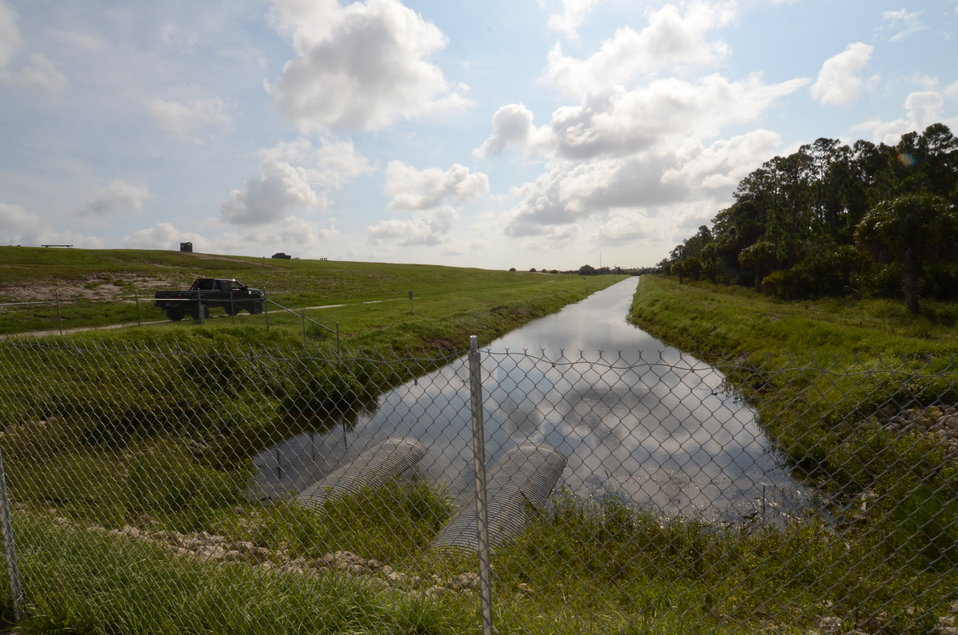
Agriculture Secretary Tom Vilsack today announced $100 million in financial assistance to acquire permanent easements from eligible landowners in four counties and assist with wetland restoration on nearly 24,000 acres of agricultural land in the Northern Everglades Watershed, FL, on Thursday, August 8, 2011.